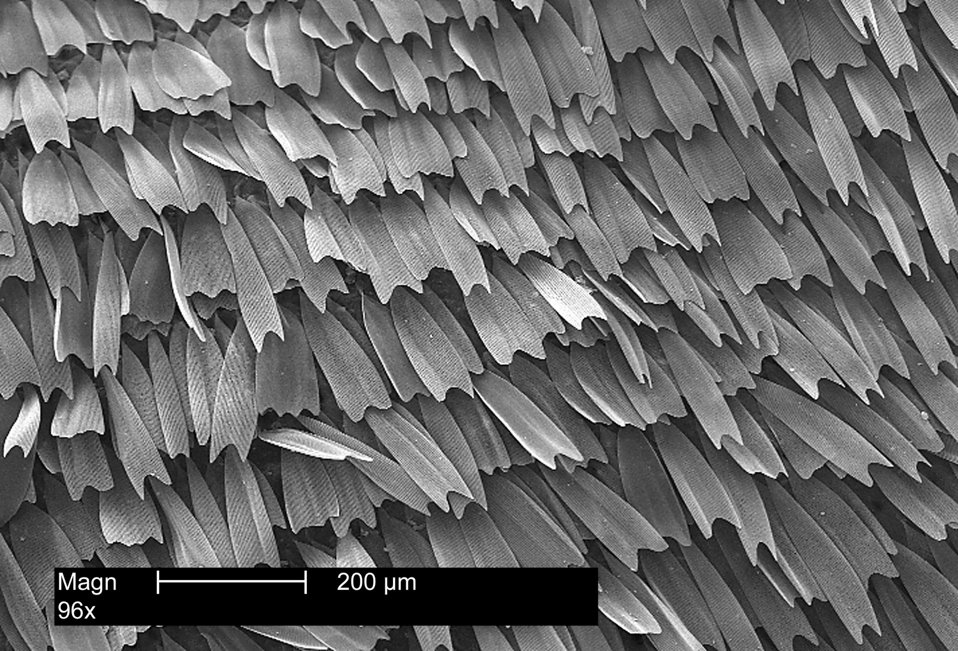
Scalar patterning of a butterfly's wing magnified 96x.